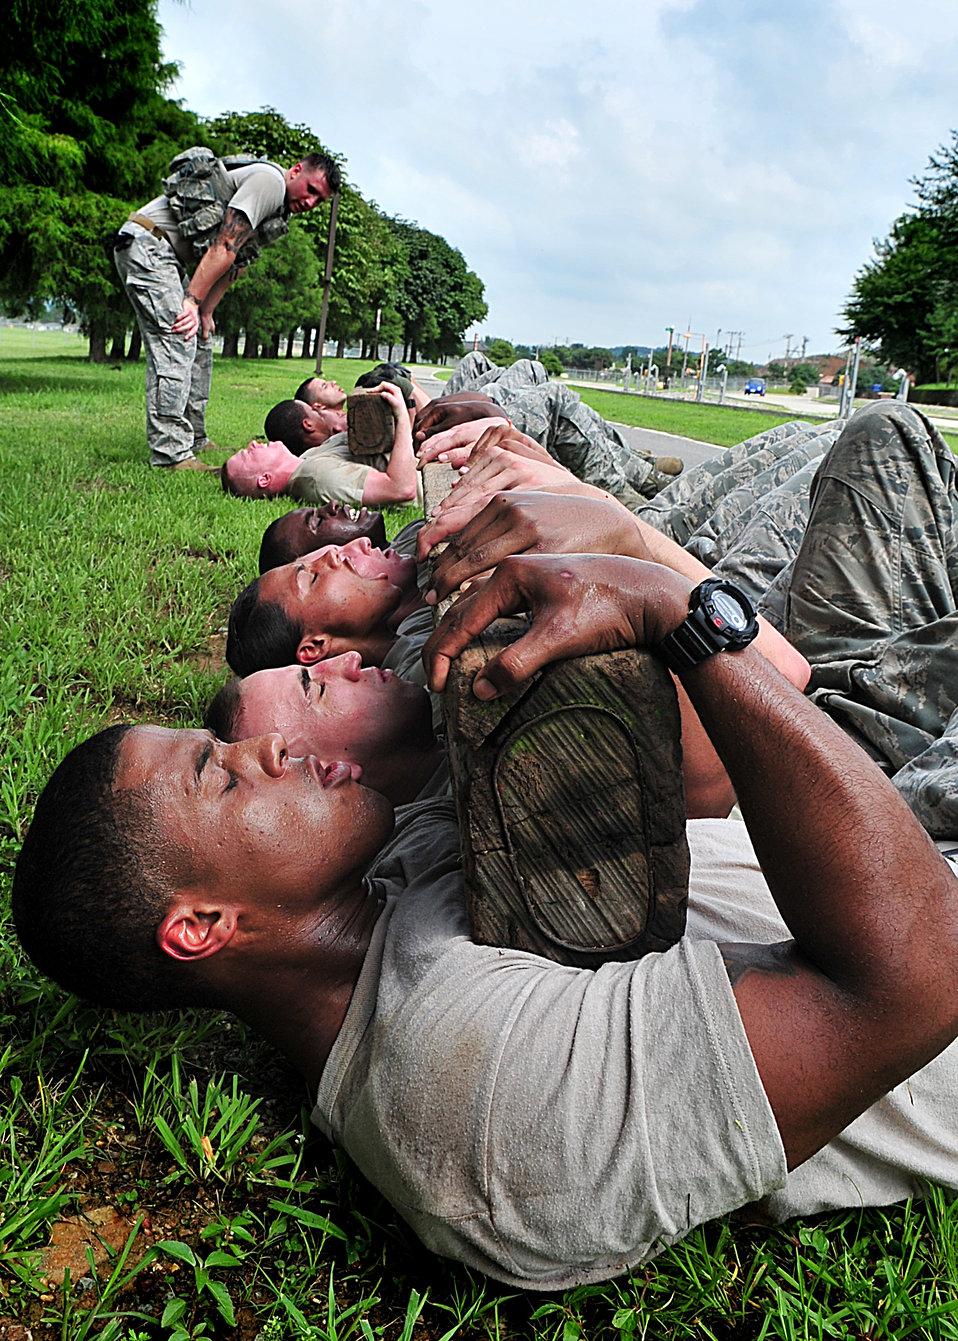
Laying the wood

As part of a quick-response team qualification course, Airmen from the 51st Security Forces Squadron accomplish sit-ups while securing a 100-pound wooden beam Aug. 9, 2011 at Osan Air Base, South Korea. To become a member of the base’s QRT, Airmen have to overcome challenges that test their strength, endurance and ability to act as a cohesive squad.